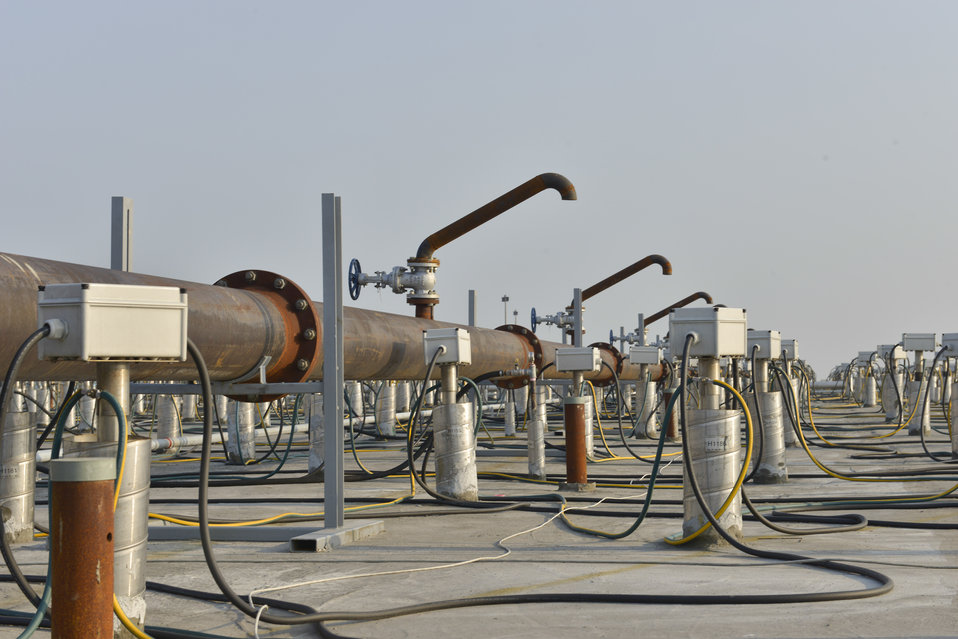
The containment and treatment structure at the Danang Airport Project site.

March 24, 2014.